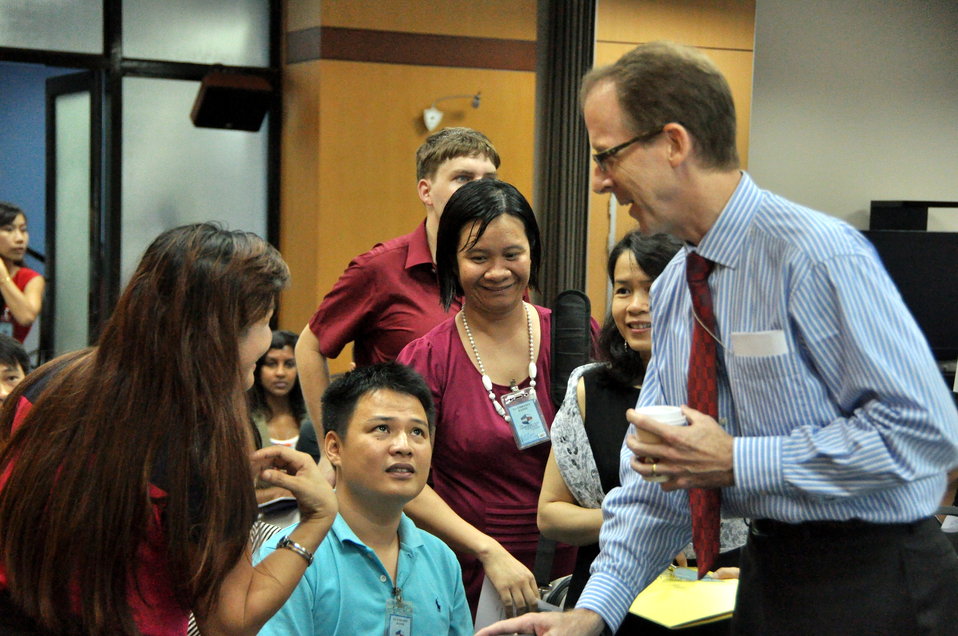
Development Grants Program Workshop in Hanoi

Workshop in Hanoi
July 24, 2013